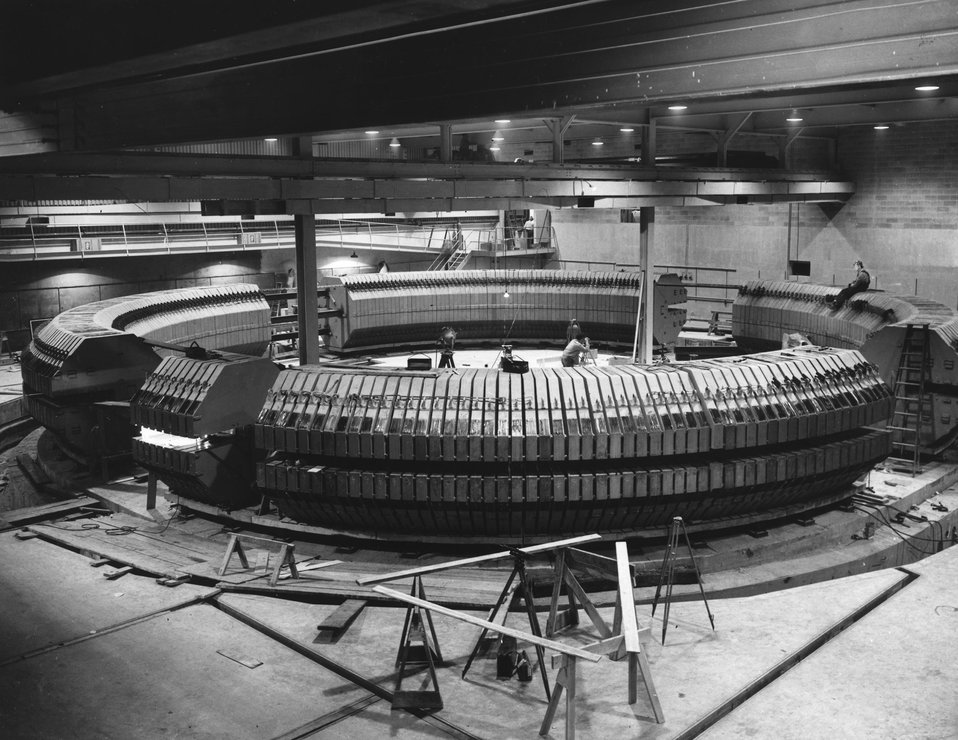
A view of the erection of the magnet. c. 1950